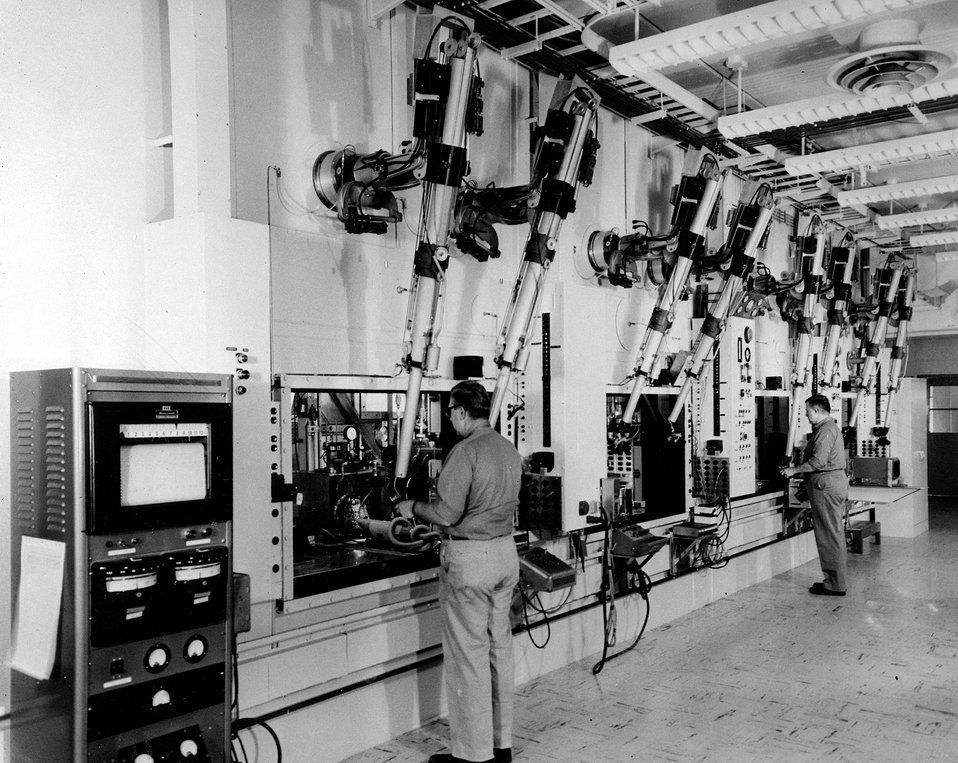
A hot cell technician is shown in front of one of the five bromide shielding windows using sealed master-slaver manipulators to adjust an analytically balance preparatory to making immersion density measurements on plutonium alloy specimens.
c.1965